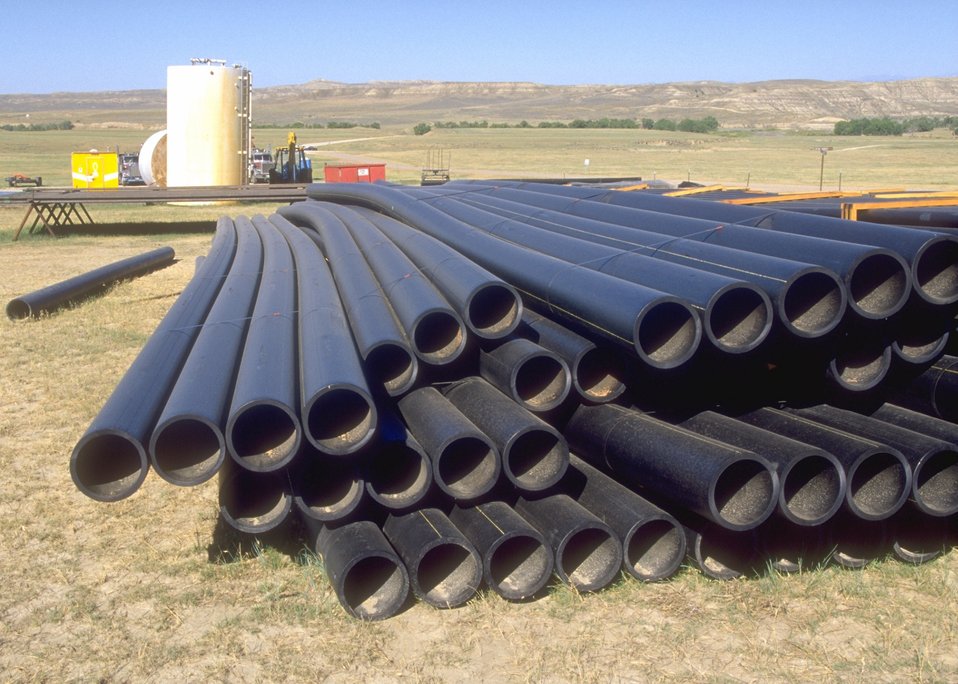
Temporary storage area for coal bed methane development, Buffalo Field Office.